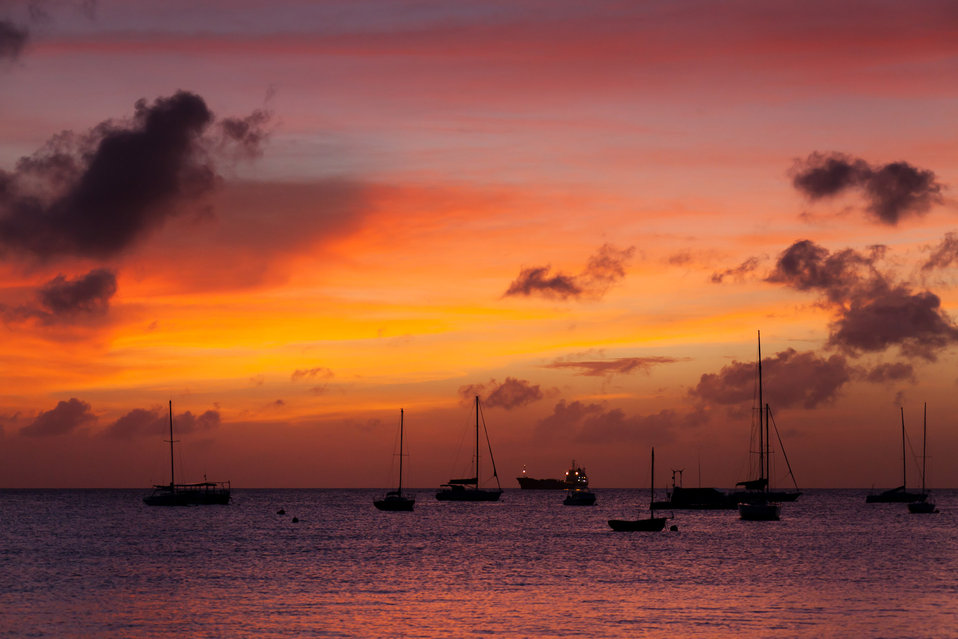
Ships at sunset

Ships in the harbor at sunset.